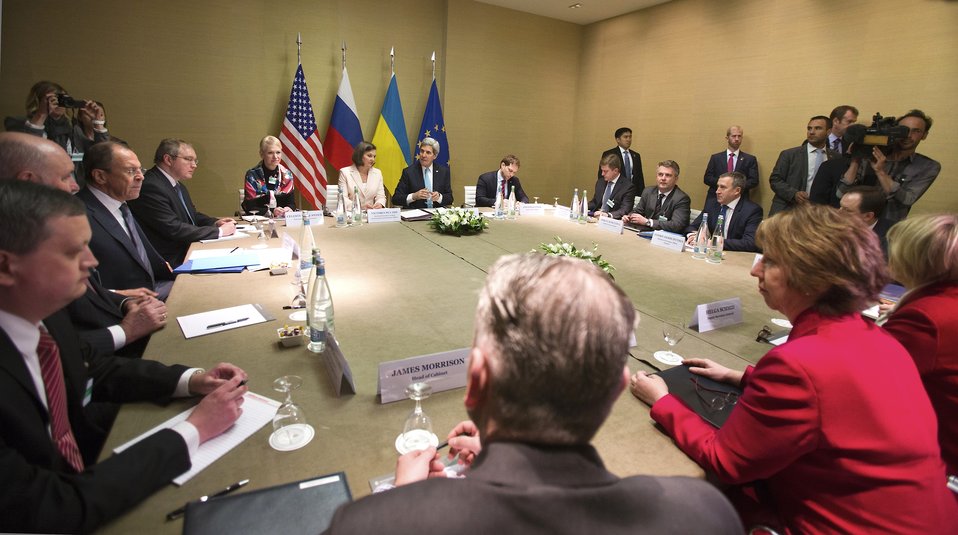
U.S., Russia, Ukraine, EU Hold Quadrilateral Meeting in Geneva

U.S. Secretary of State, Russian Foreign Minister Sergey Lavrov, Ukrainian Foreign Minister Andrii Deshchytsia, and European Union High Representative Catherine Ashton sit across from one another in Geneva, Switzerland, on April 17, 2014, before a quadrilateral meeting focused on Ukraine.